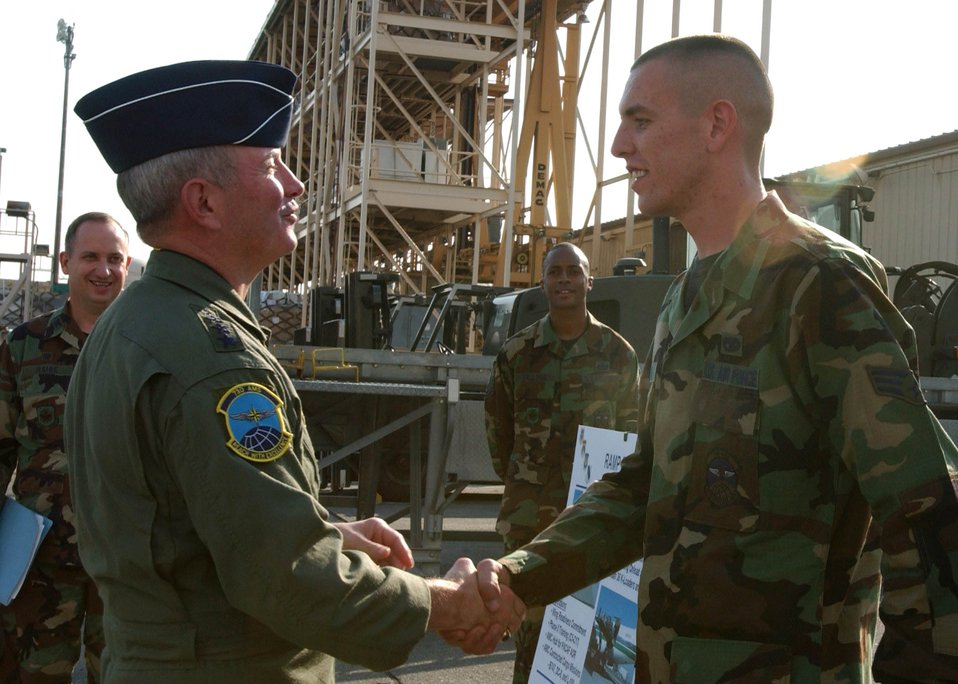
Yokota mission essential for global reach

Gen. Duncan J. McNabb, Air Mobility Command commander, coins Senior Airman David Hagan, 730th Air Mobility Squadron ramp services technician, during his visit at Yokota Air Base, Japan, Nov. 16.